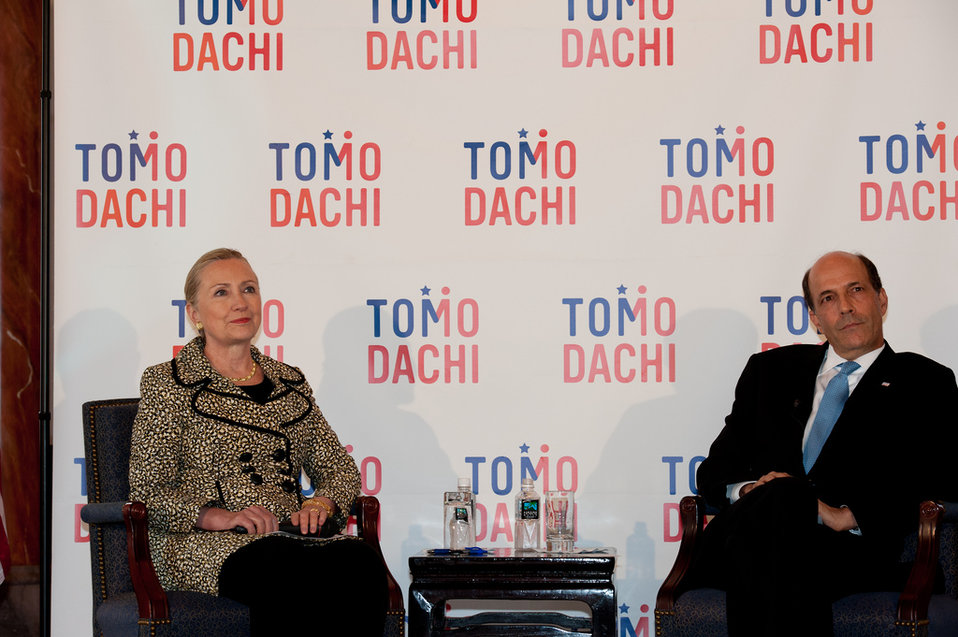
Secretary Clinton and Ambassador Roos Hold a Discussion With Tomodachi Program Youth

U.S. Secretary of State Hillary Rodham Clinton and U.S. Ambassador to Japan John Roos hold a discussion with Tomodachi program youth in Tokyo, Japan, on July 8, 2012.